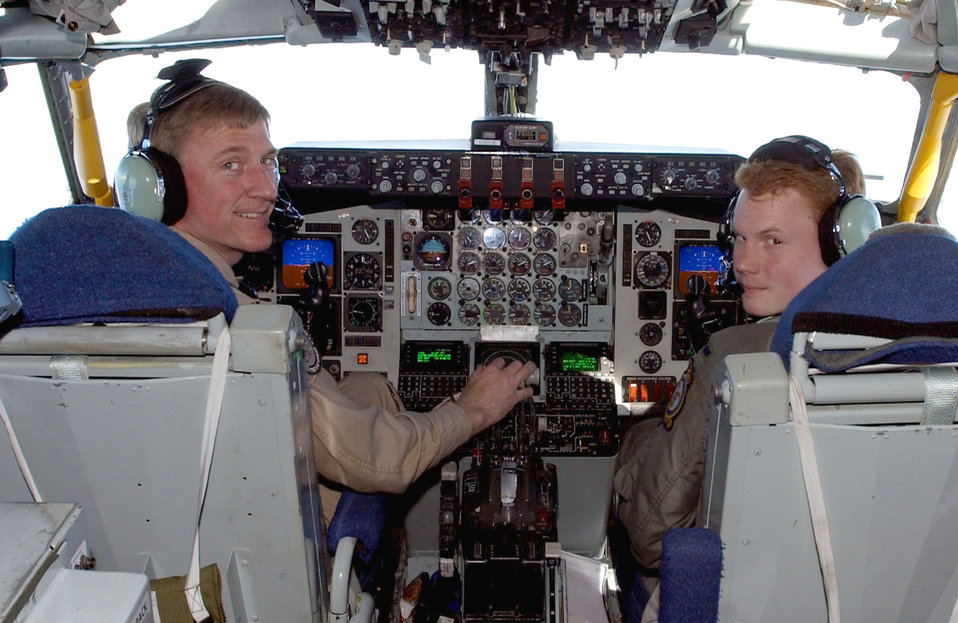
Brothers refueling brothers

OPERATION IRAQI FREEDOM -- Col. Tony Mauer (left) and 1st Lt. Eric Adcock fly a KC-135 Stratotanker as they prepare to refuel both their brothers' aircraft. Mauer's brother, Maj. John Mauer, is a navigator in the E-3 Sentry airborne warning and control system aircraft, and Adcock's brother, 1st Lt. Nick Adcock, is a pilot in the E-8C Joint Stars aircraft.